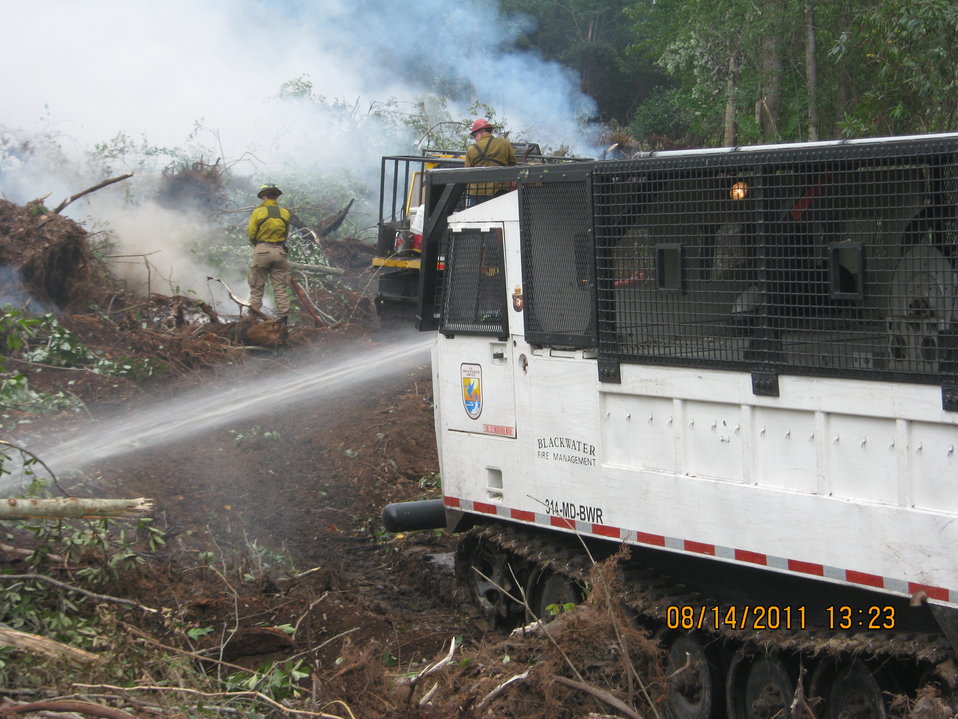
Swamp vehicle at work

Suffolk, VA, August 2011. An armored personnel carrier, or full track, works the line. A variety of low-pressure vehicles have been used to put out the Lateral West Fire burning deep in peat soils on Great Dismal Swamp National Wildlife Refuge.